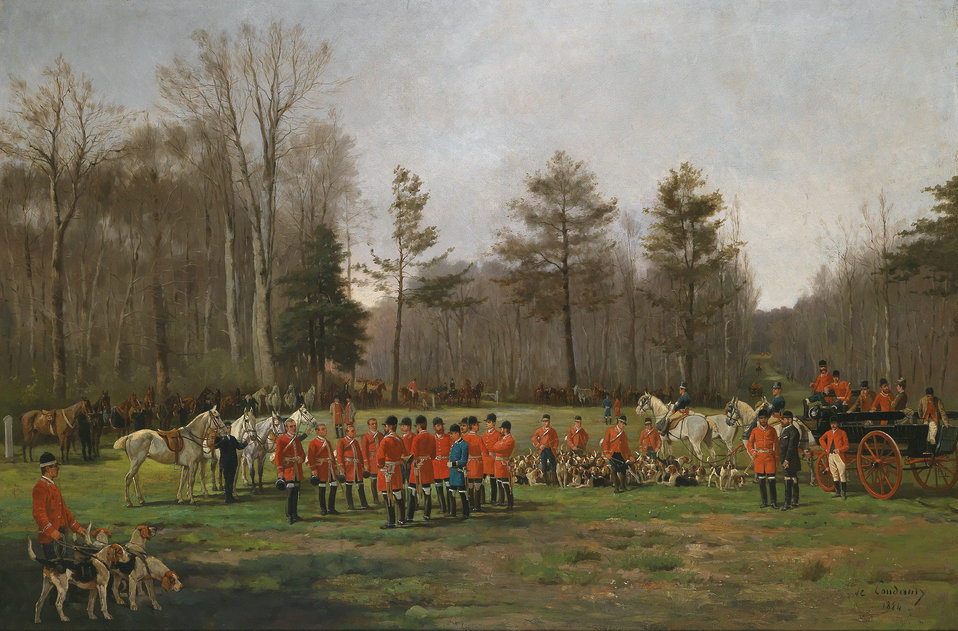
Deutsch: Vor der Fuchsjagd, signiert, datiert De Condamy 1884, Öl auf Leinwand, 80,5 x 120 cm